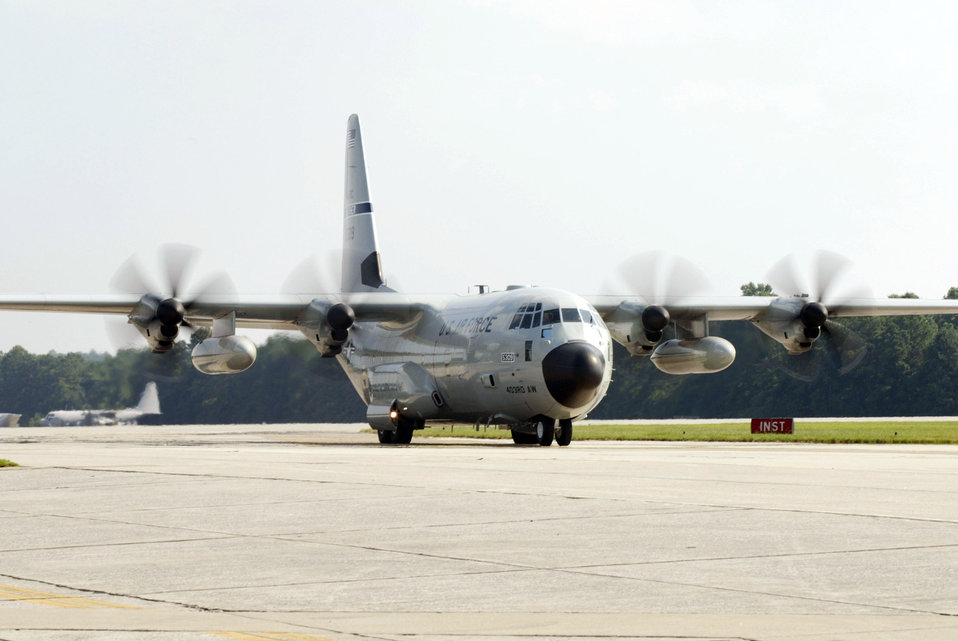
Hurricane Hunter

DOBBINS AIR RESERVE BASE, Ga. -- Hurricane Hunters from the Air Force Reserve's 53rd Weather Reconnaissance Squadron land their WC-130J Hercules here after a flight to check on Hurricane Rita. The Airmen gather information on the storm including atmospheric pressure, temperature, humidity, barometric pressure, wind speed and direction and send it directly to the National Hurricane Center. The Hurricane Hunters are the only Department of Defense organization still flying into tropical storms and hurricanes, and have done so since 1944.